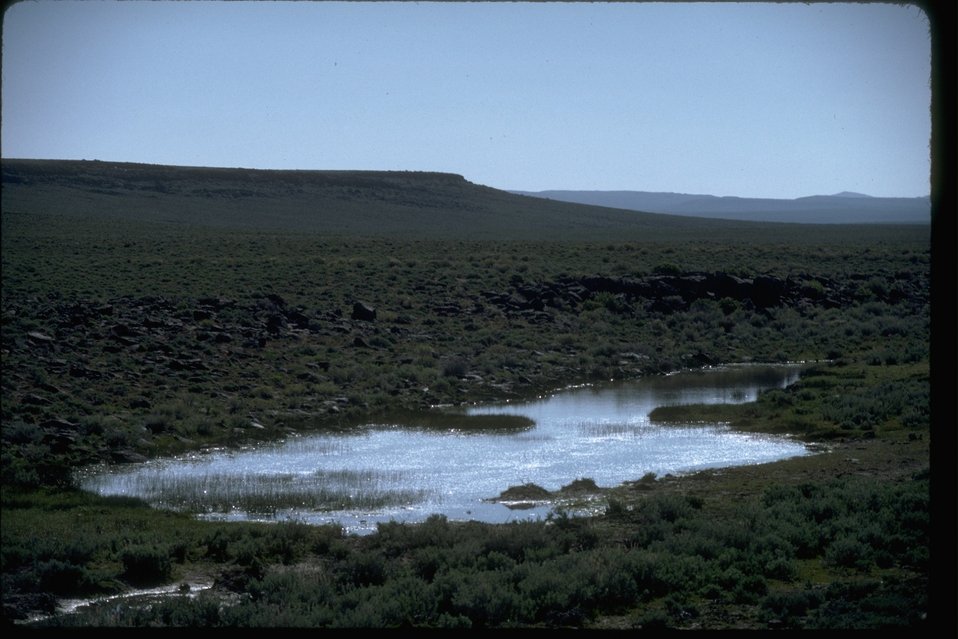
Spalding range stock Reservoir. OR 1-139